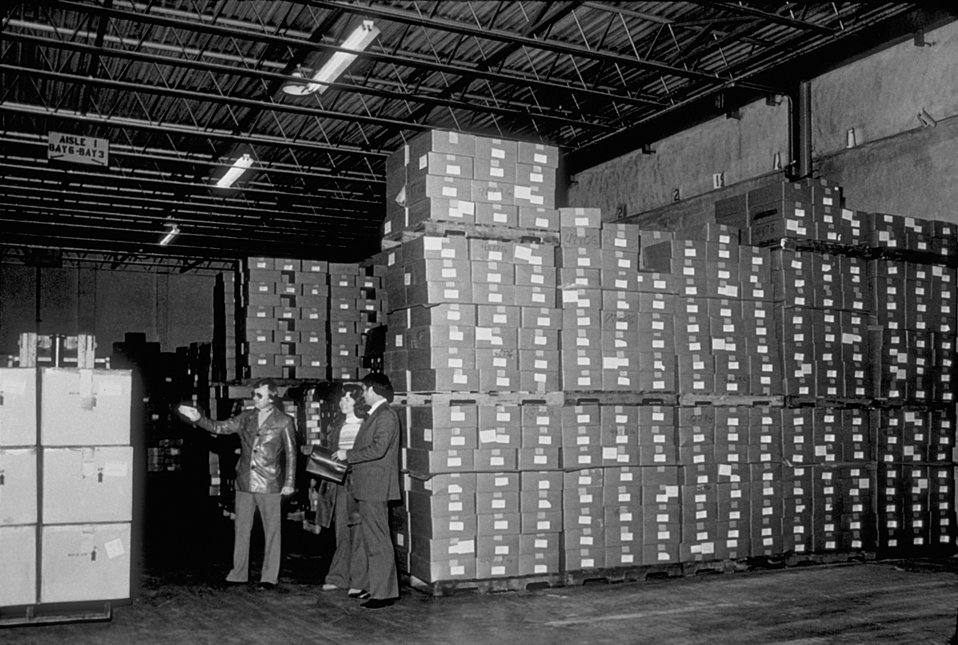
Stored boxes of swine influenza vaccine.